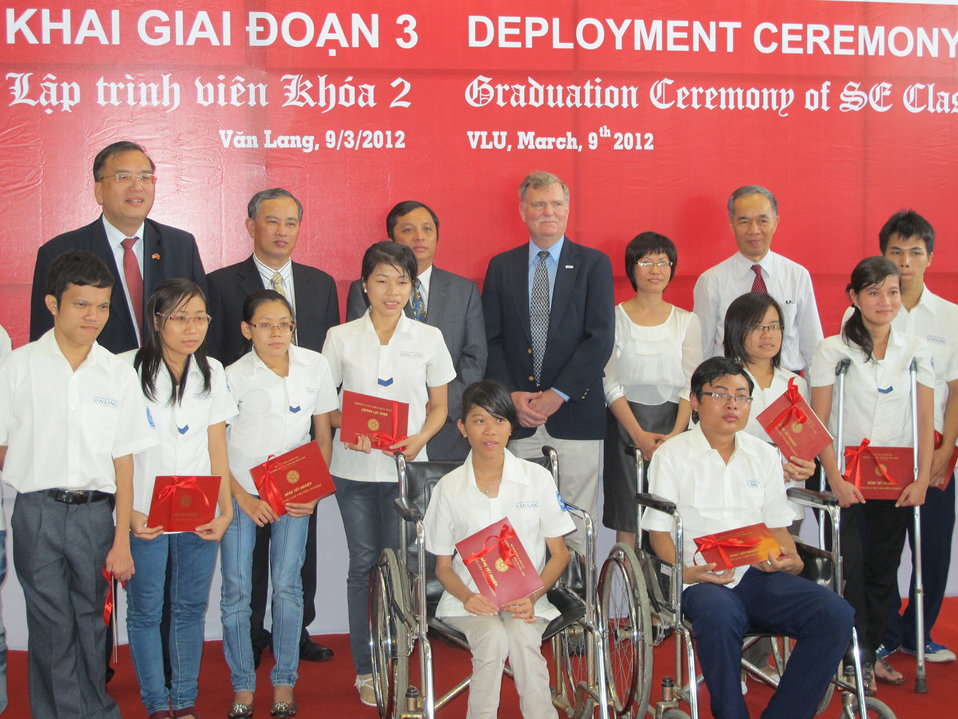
Graduates receive certificates in IT at USAID-funded training program at Van Lang University, HCMC